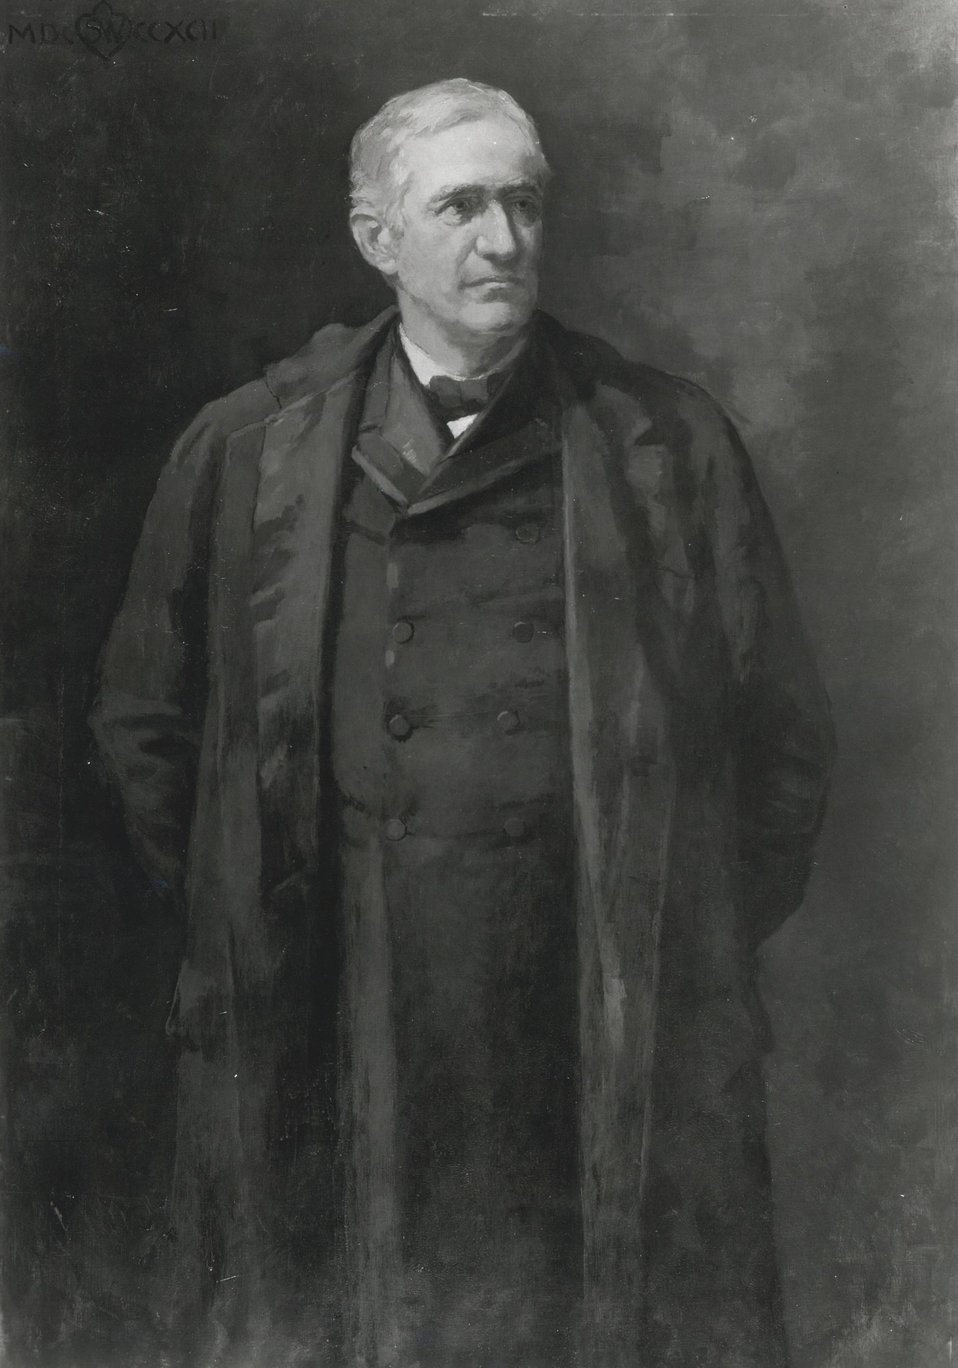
Thomas F. Bayard, U.S. Secretary of State, March 7, 1885 to March 6, 1889